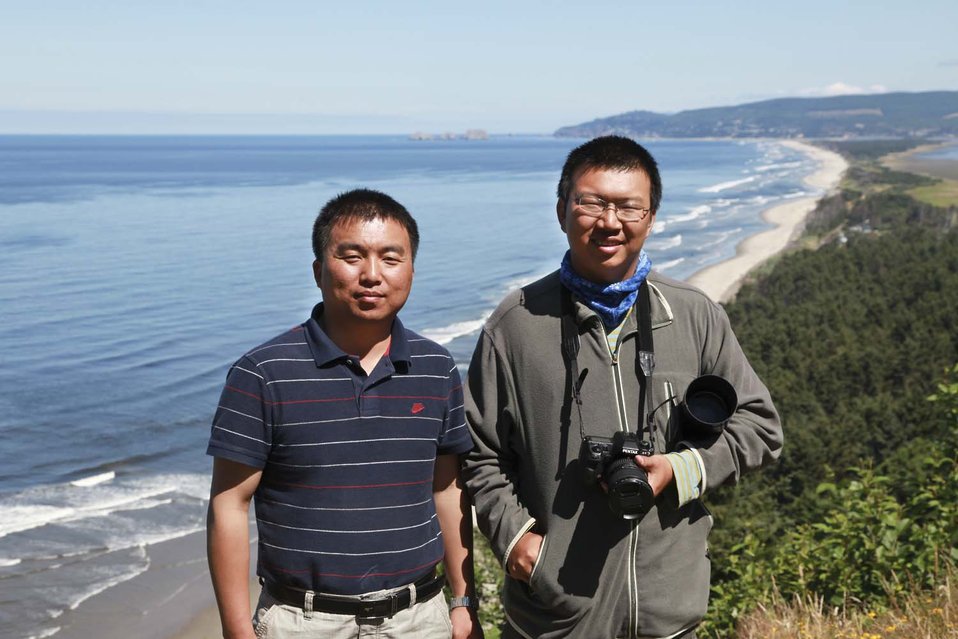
Xu Yingshou and Jia Yifei at Three Arch Rocks